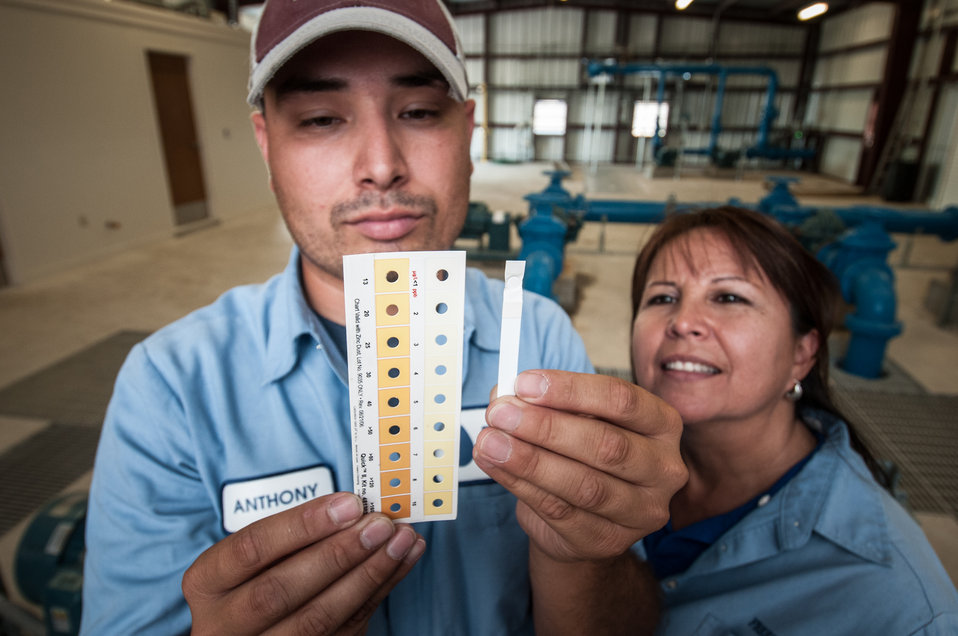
Anthony Arredondo, left, holds a test strip to a comparison chart to show Freer Water Control and Improvement District (FWCID) Manager Diana Adame, right, that the tested water is less than one part per billion of arsenic, on Tuesday June 18, 2013, in Freer, Texas.

Freer Water Control and Improvement District (FWCID) benefits from the financial assistance of the U.S. Department of Agriculture (USDA) Rural Development (RD) to complete a two-phase approach to meeting the city’s water supply and safety needs, on Tuesday, June 18, 2013. Although, the naturally occurring arsenic levels have remained constant for more than a century, the Environmental Protection Agency (EPA) safe level standards have established lower levels of arsenic to be safe for human consumption. To meet those levels FWCID approached USDA and was awarded a $986,000 loan for Phase I, to install two new water wells, each rated at 167 gallons per minute (creating a total of eight wells); 13,600 feet of well collection lines; and 15,000 linear feet of well control line to remotely control the well pumps and the 1,000,000 gallon holding tank at the well facility, which supplies water to the new Arsenic Removal System (Phase II). Previously, water was manually controlled by personnel who knew when and how long to manually opened and closed water valves or started well pumps to ensure holding tank levels were within operating levels during peek and slack times of the day. Phase II was a combination of a $1,832,000 loan and a $1,258,750 grant, which provided for the customized arsenic removal system, seen in these photos. The system includes a new 3,530 sp. ft. facility, on a .76-acre site, and houses the operations room, computer and power system, laboratory room, and pump systems. The entire operation can be monitored through a desktop computer interface system. The computer-controlled system ensures raw water is fed to the arsenic removal pump system, which works in sequence to maintain a constant pressure, when needed, to pump water through (blue) arsenic removal absorber vessels, and into ground storage tanks that feeds the residential and commercial needs of the city. Samples of water are periodically tested; and so far the arsenic levels have been below 1 part per billion (PPB), well under the 10 PPB limit.